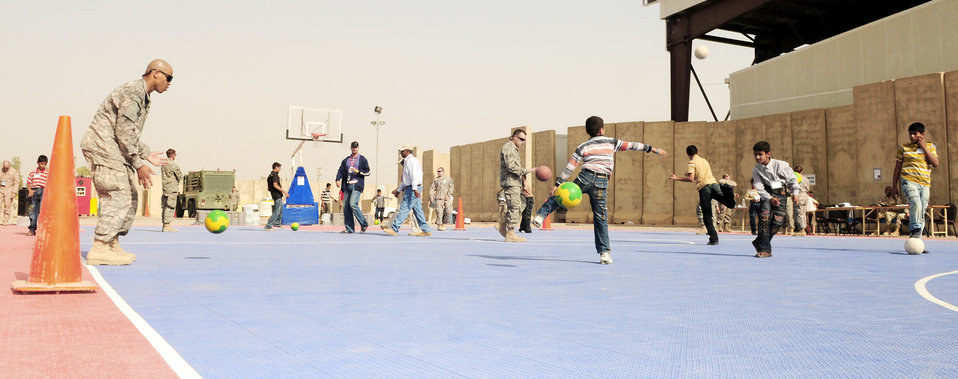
Iraqi children come out to play at Joint Base Balad

Servicemembers play sports with local children during Iraqi Children's Day Oct. 10, 2009, at Joint Base Balad, Iraq.